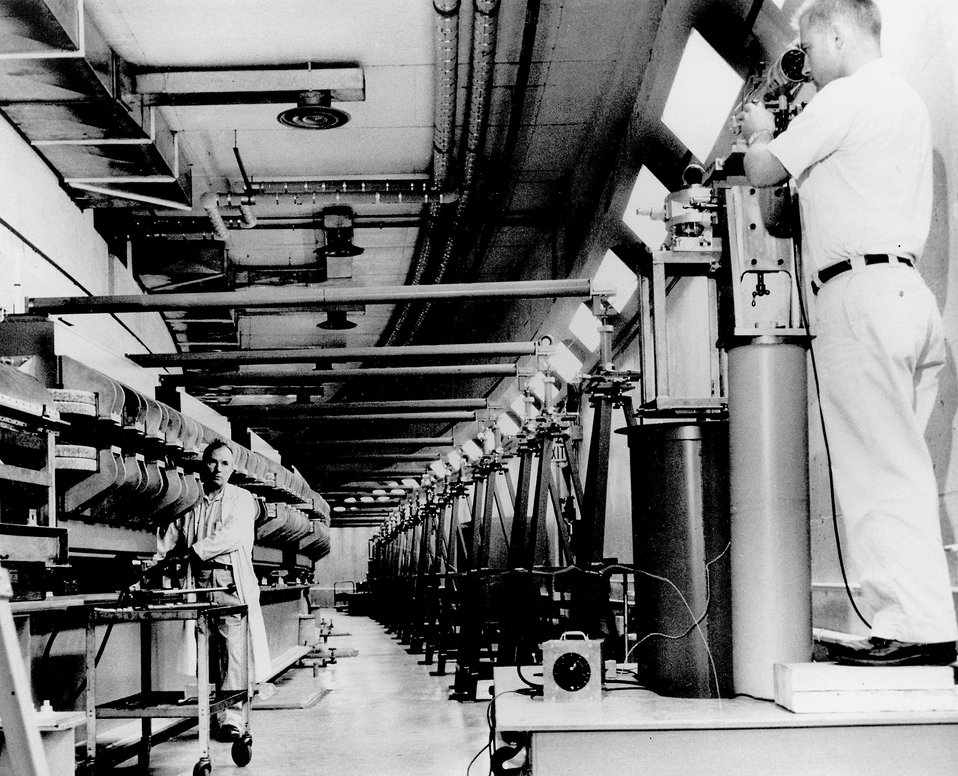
Positioning magnets inside the tunnel of the Alternating
Gradient Synchrotron, Brookhaven National Laboratory.